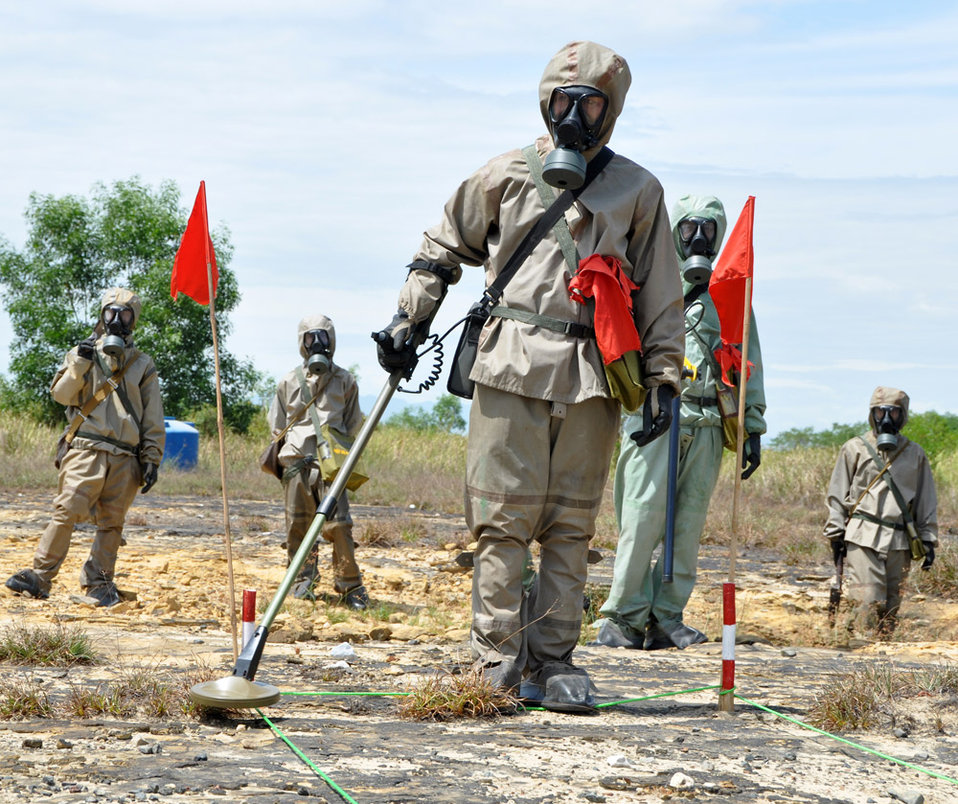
A Vietnamese soldier demonstrates UXO detection and clearance in Danang. June 17, 2011